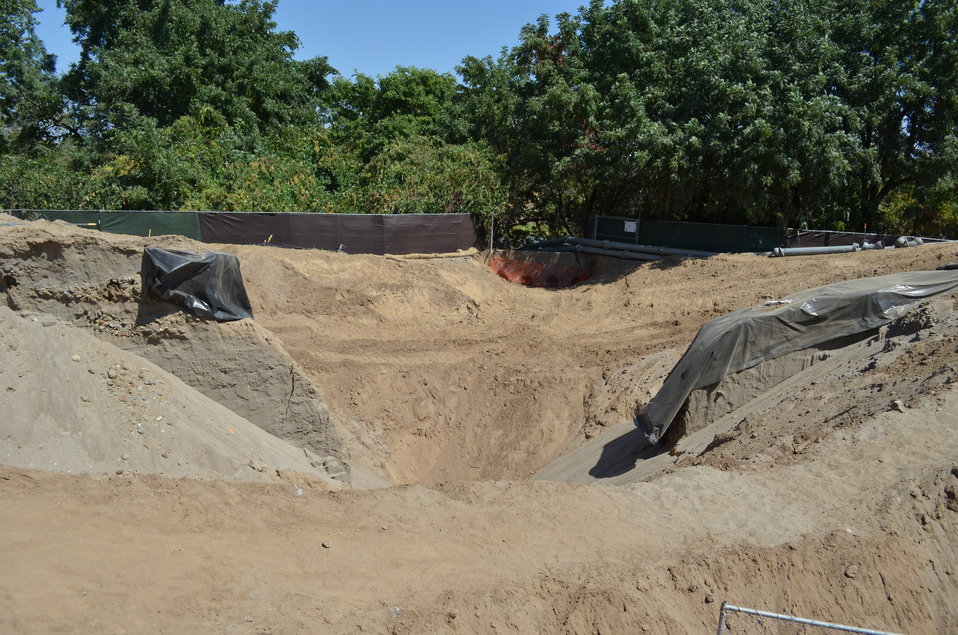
American River seepage wall partially exposed

A seepage wall in an American River is partially exposed Aug. 21, 2013 near the River Park neighborhood of Sacramento, Calif. Completion of this section was inhibited more than a decade ago by a city sump station's piping running through the levee and out to the river. The U.S. Army Corps of Engineers Sacramento District built more than 20 miles of seepage cutoff walls into American River levees between 2000 and 2002, but work was set aside for later where construction was complicated by encroachments like utilities, power lines, bridges and sump stations.